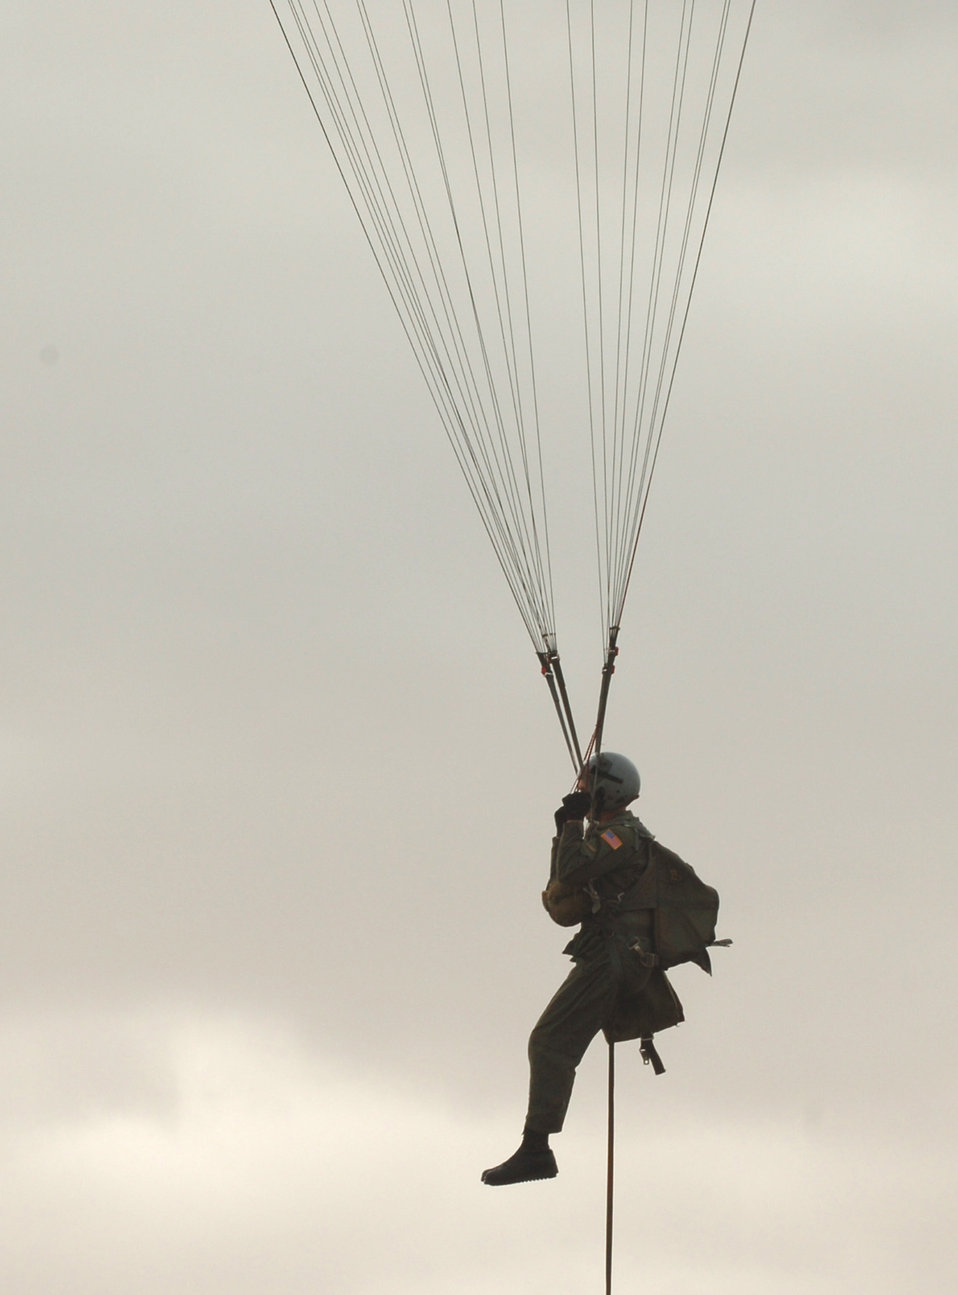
SERE specialists on target

Senior Airman Brian Daubert prepares to land during a parachute jump demonstration Sept. 18 during survival, evasion, resistance and escape training at Fairchild Air Force Base, Wash. SERE specialists provide weekly demonstrations to show students the performance characteristics of the C-9 emergency egress parachute. The jump demo and combat, search and rescue demo are integrated seamlessly into one large demonstration in order for the students to see the entire sequence of events from the moment they egress the aircraft until they are recovered by friendly forces.